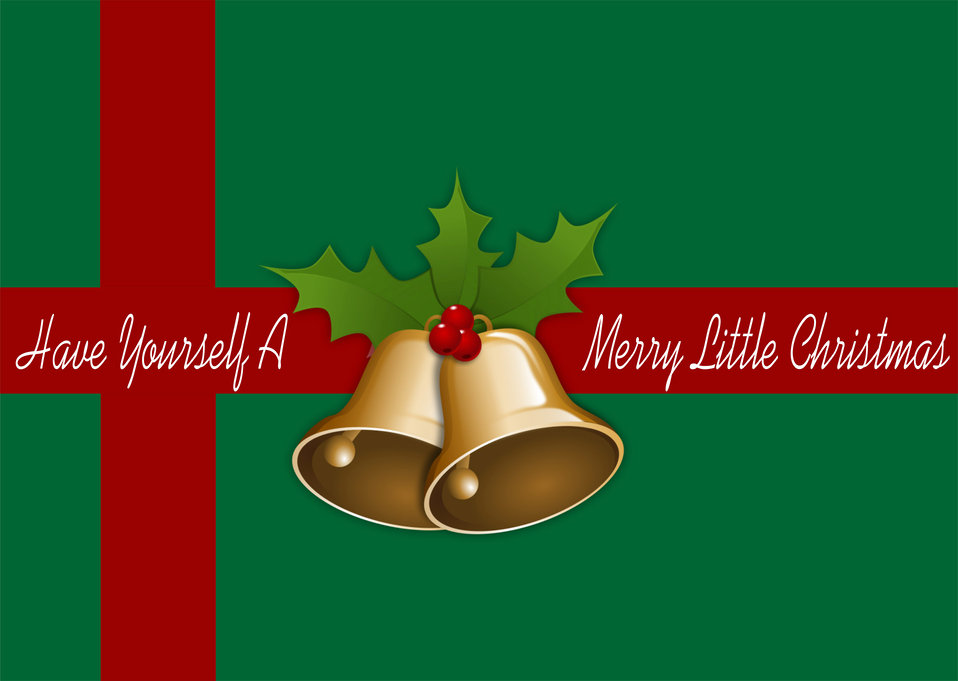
Merry christmas present image

Green background with a strip of red and bell.